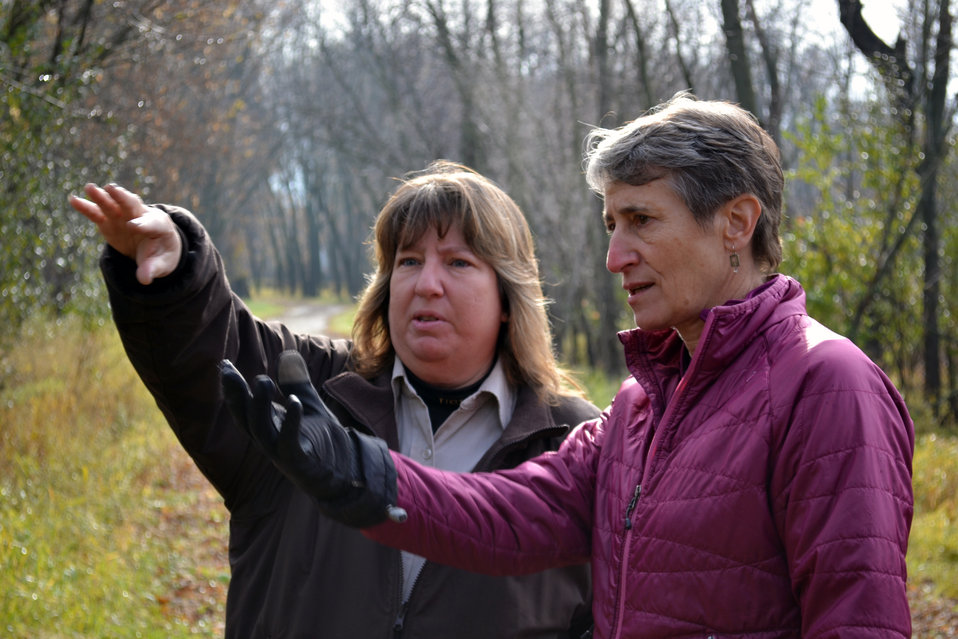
Minnesota River Habitats

Wildlife Biologist Vicki Sherry tours Secretary Jewell though Minnesota Valley National Wildlife Refuge.